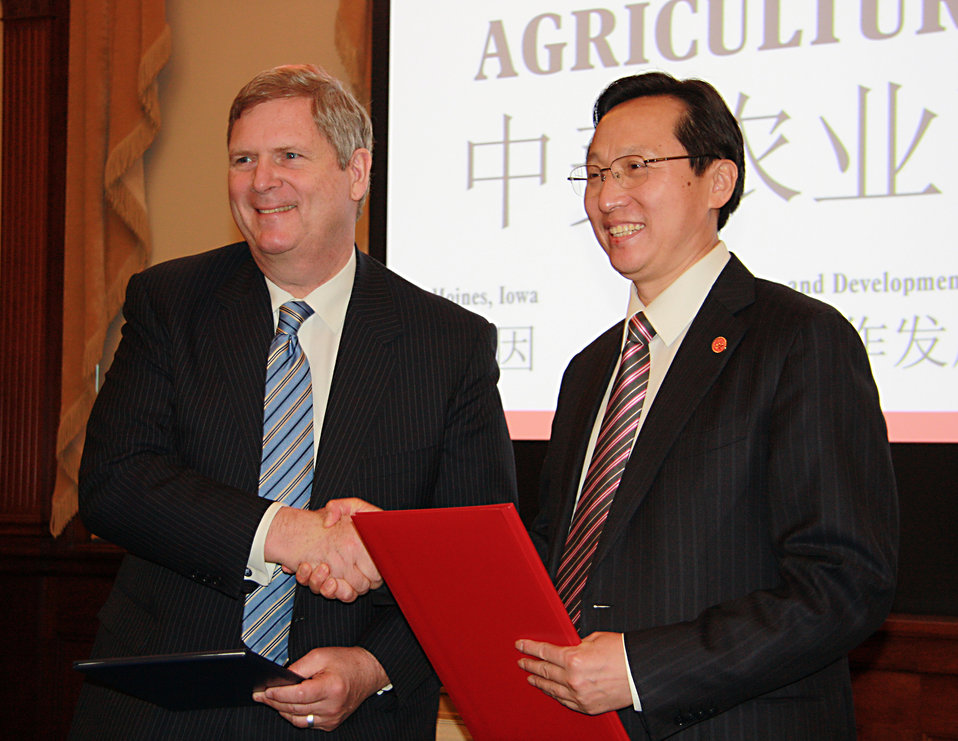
Agriculture Secretary Tom Vilsack and China's Minister of Agriculture Han Changfu today signed an historic Plan of Strategic Cooperation that will guide the two countries' agricultural relationship for the next 5 years. The plan was signed as part of the U.S.-China Agricultural Symposium held at the World Food Prize Hall of Laureates, Des Moines, IA, on Thursday, February 16, 2012. The symposium focused on bilateral cooperation in the areas of food safety, food security and sustainable agriculture, as well as enhanced business relationships between the two countries.